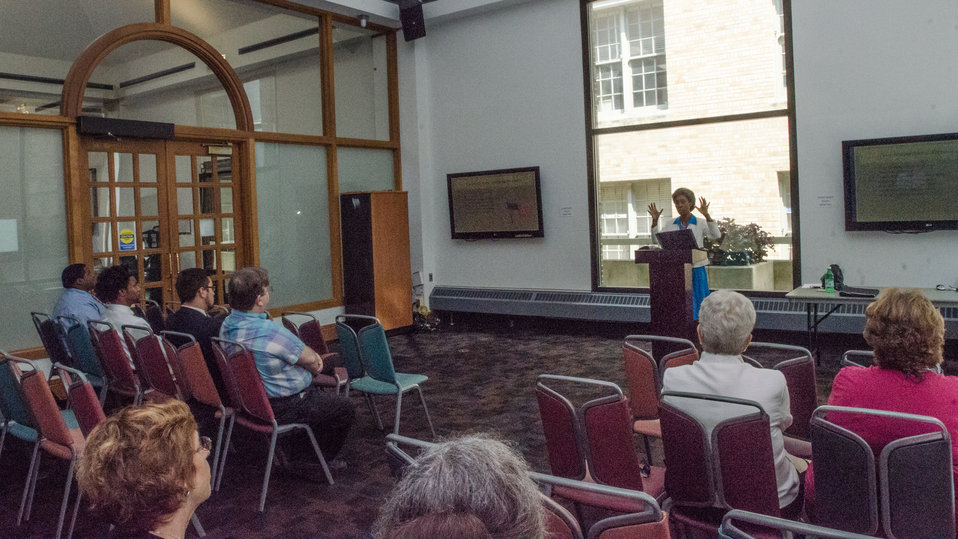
Sage Horizons Consulting Owner Cynthia Gibbs speaks at the U.S. Department of Agriculture’s (USDA) Rural Development (RD) 2nd Annual Cultural Transformation kickoff opening ceremony and forums, themed “Employees Influencing Change,” on Tuesday, Aug. 13, 2013, USDA in Washington, D.C.